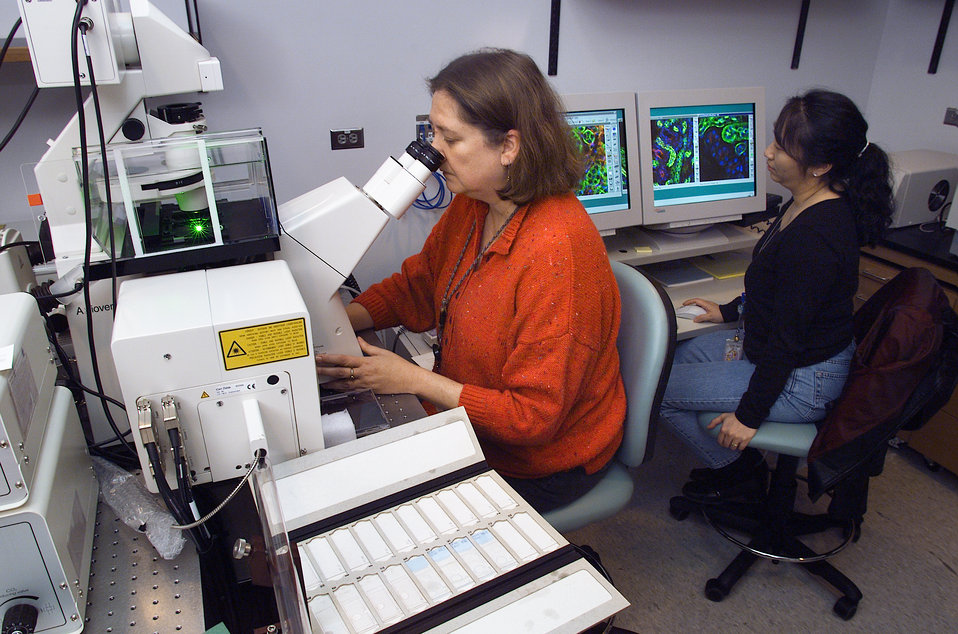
CDC scientists at work using a confocal microscope.